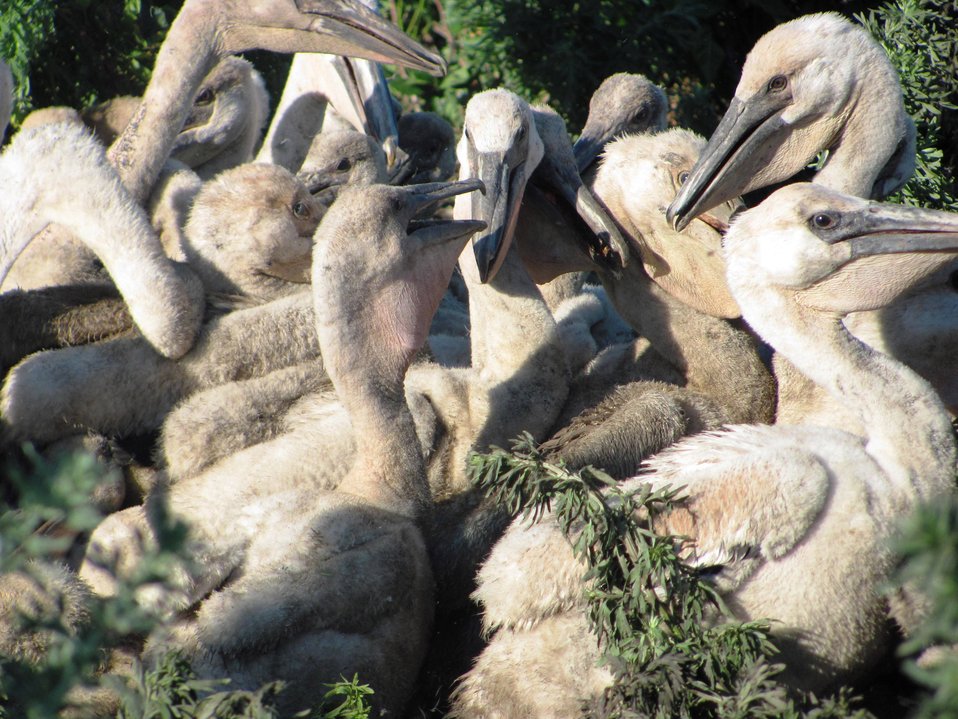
American White Pelican Creche

This creche of juvenile American White Pelicans was gathering on the south island of Chase Lake National Wildlife Refuge during banding.

Photo Credit: Char Binstock/USFWS; Woodworth, ND (2012)

Photo Contest Entry #102